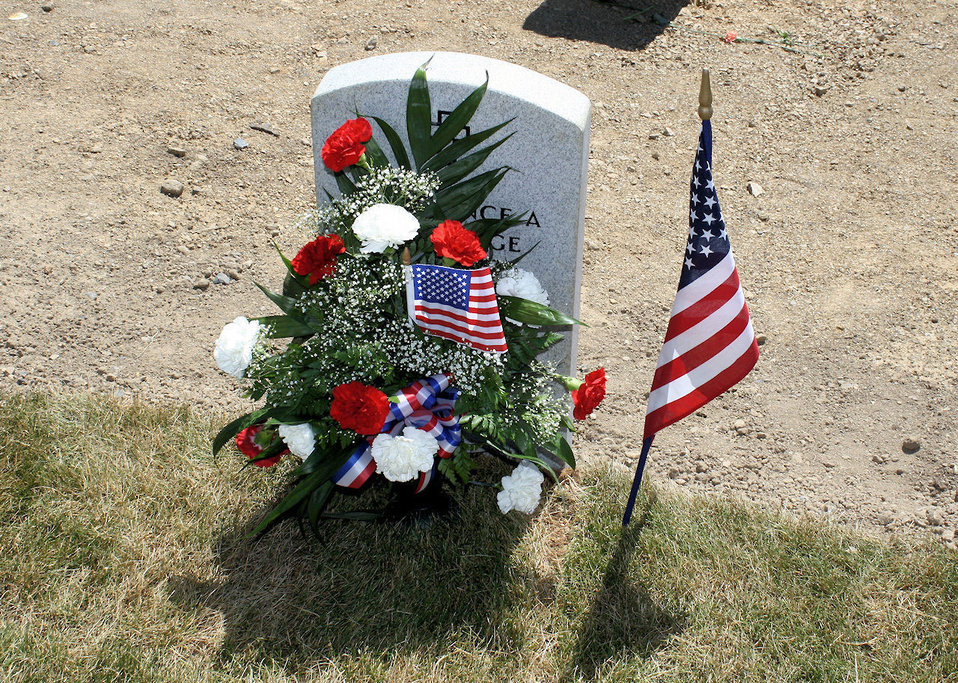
Headstone with flowers

Picture taken at the fort indiantown gap national cemetery with flowers and flag for memorial day.